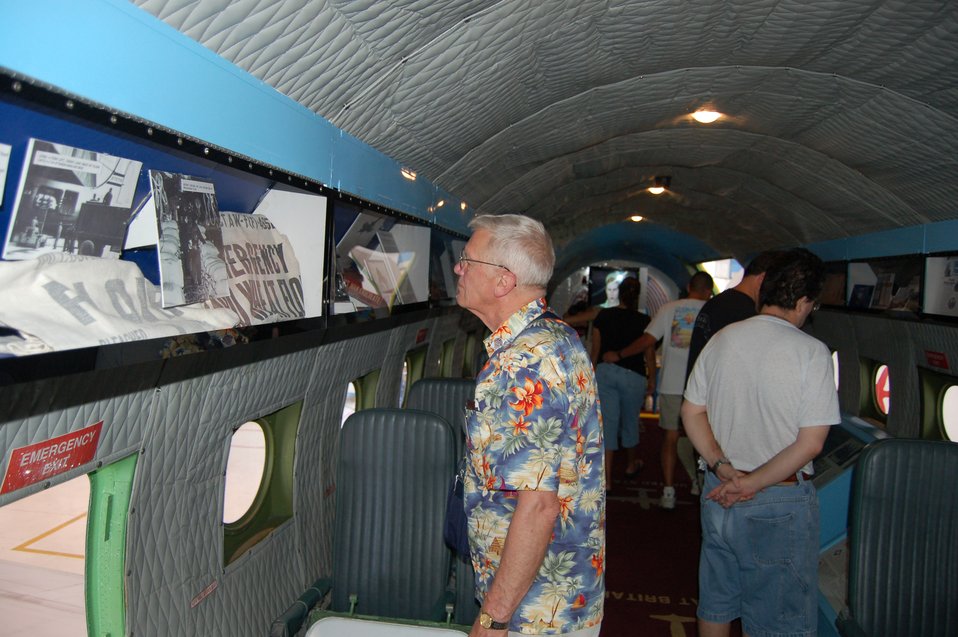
Visit

Approximately 500 visitors got a firsthand look of a C-54 during a March 22 open house at Coast Guard Air Station Borinquen, Puerto Rico. C-54s were used during the Berlin Airlift. Coast Guard Air Station Borinquen is located at what used to be Ramey AFB, which closed in 1973.